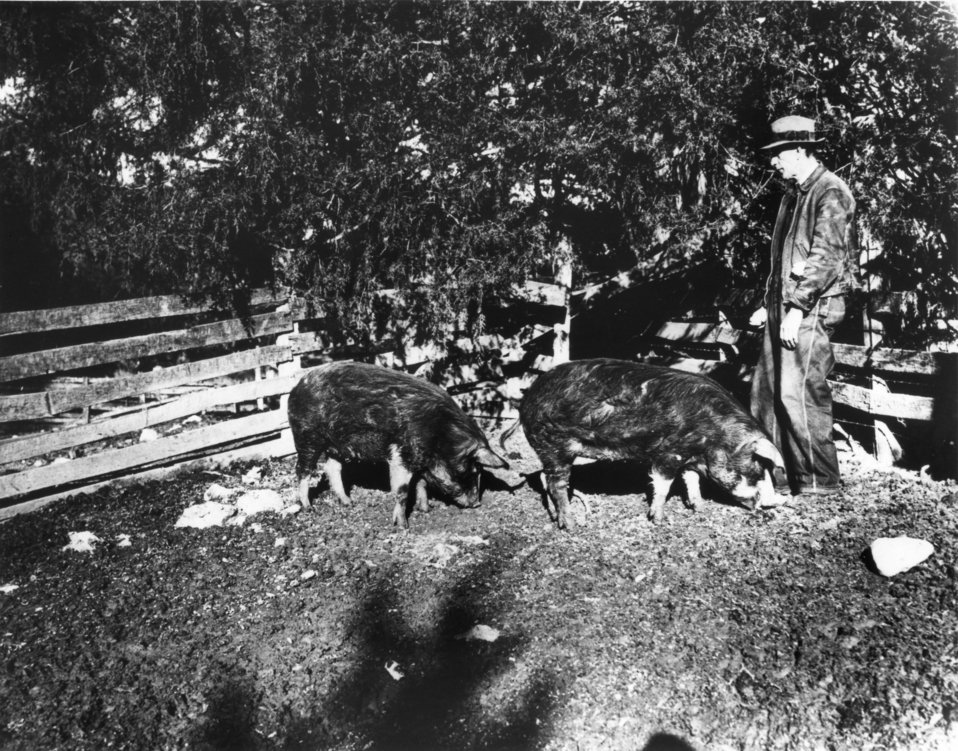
Early settlers at Oak Ridge